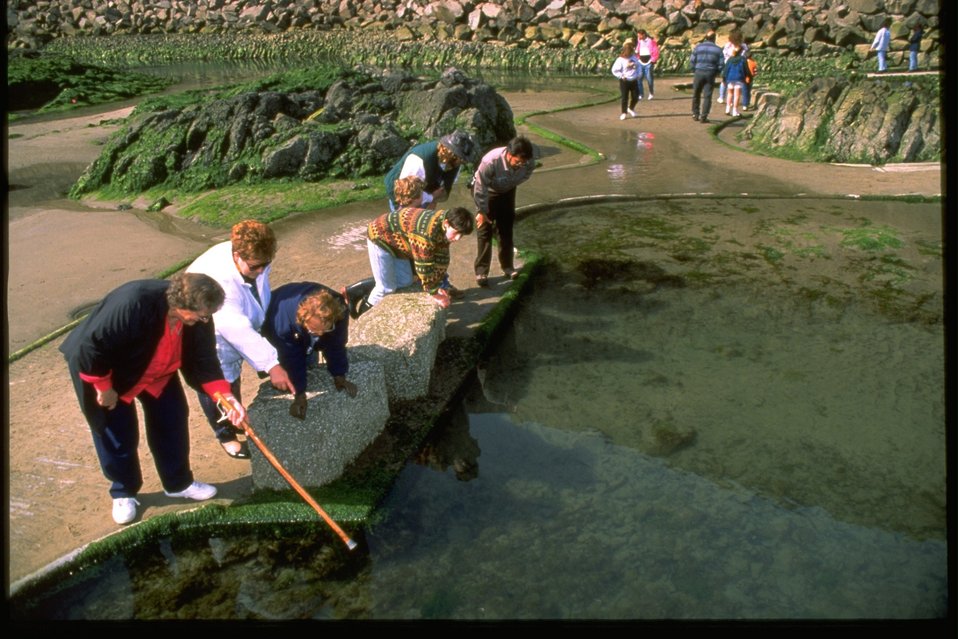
Programs at Yaquina Head Outstanding National Area accessible tidepools.